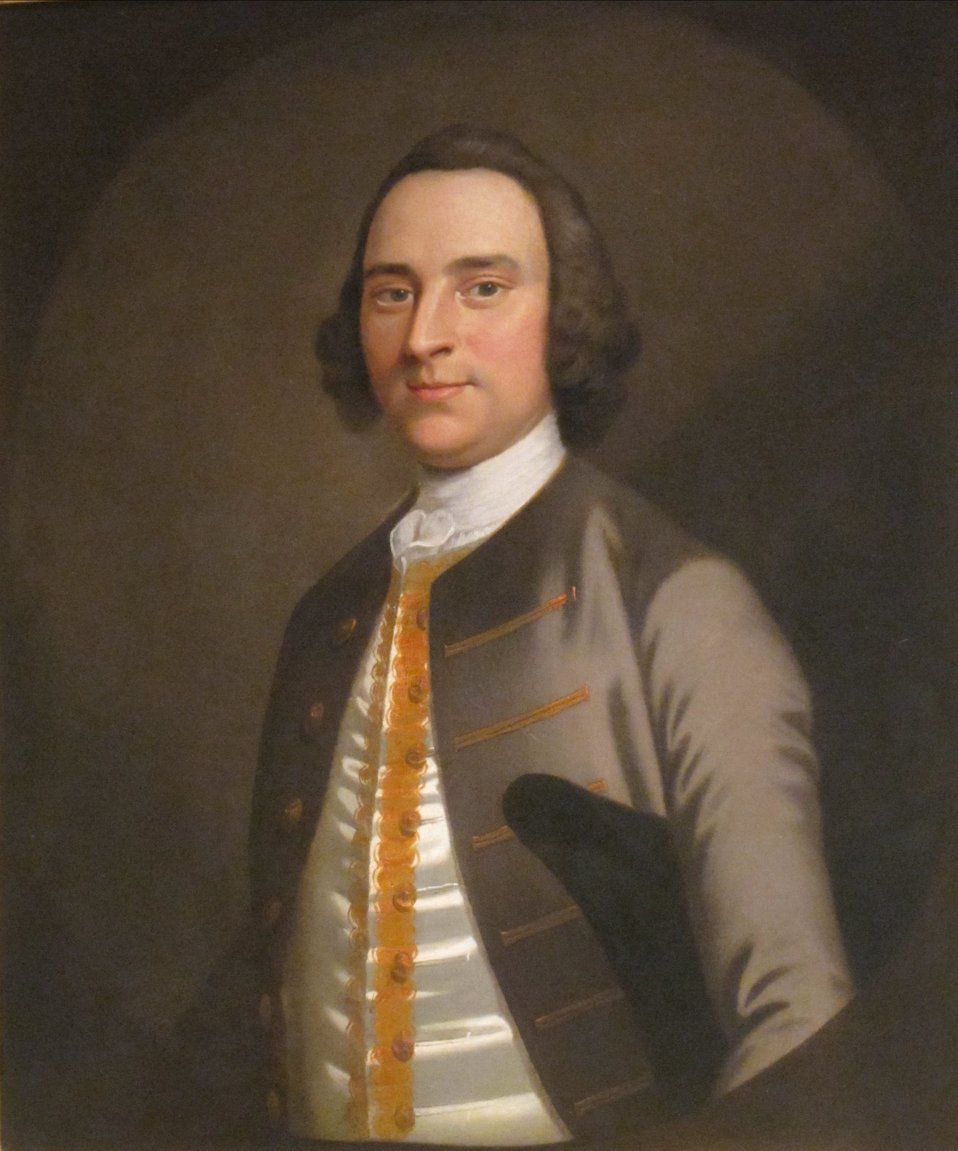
Philip de Visme, oil on canvas painting by John Wollaston, 1749-52, Dayton Art Institute